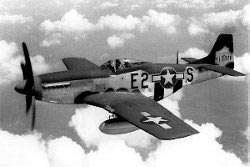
P-51

The P-51 Mustang began as the NA-73 in 1940 at Britain's request. The design showed promise and the Army Air Forces purchase of Allison-powered Mustangs began in 1941 primarily for photo reconnaissance and ground support use due to its limited high-altitude performance.